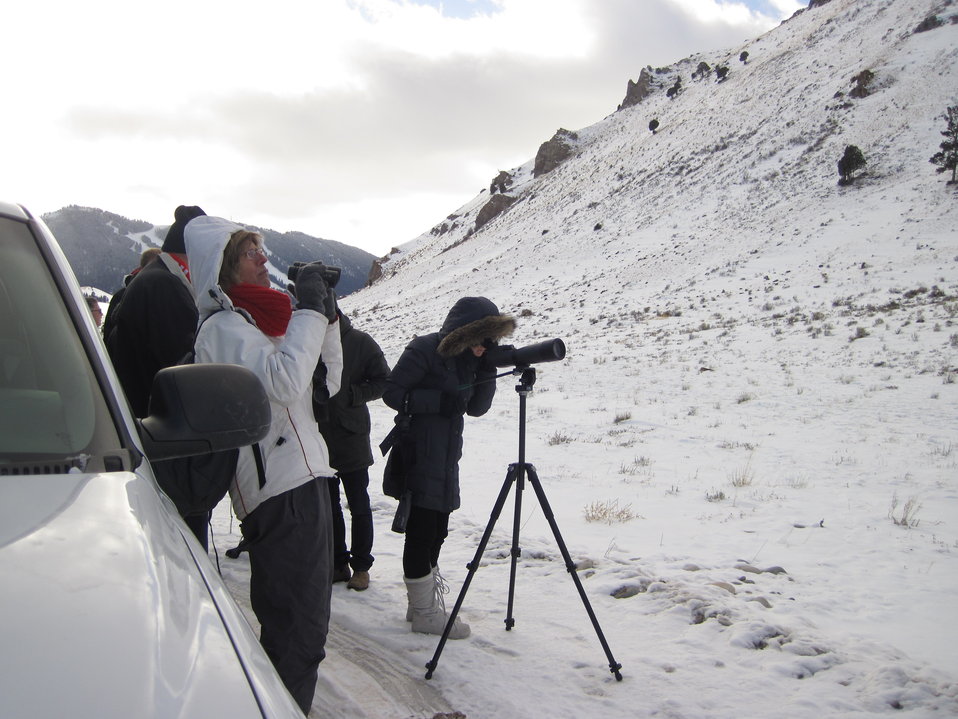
Scanning the Hillside

A popular stop on the Refuge Road is alongside Miller Butte, where wintering bighorn sheep can frequently be seen. Winter naturalists provide a spotting scope and binoculars during the excursions to enhance people's wildlife viewing experience.